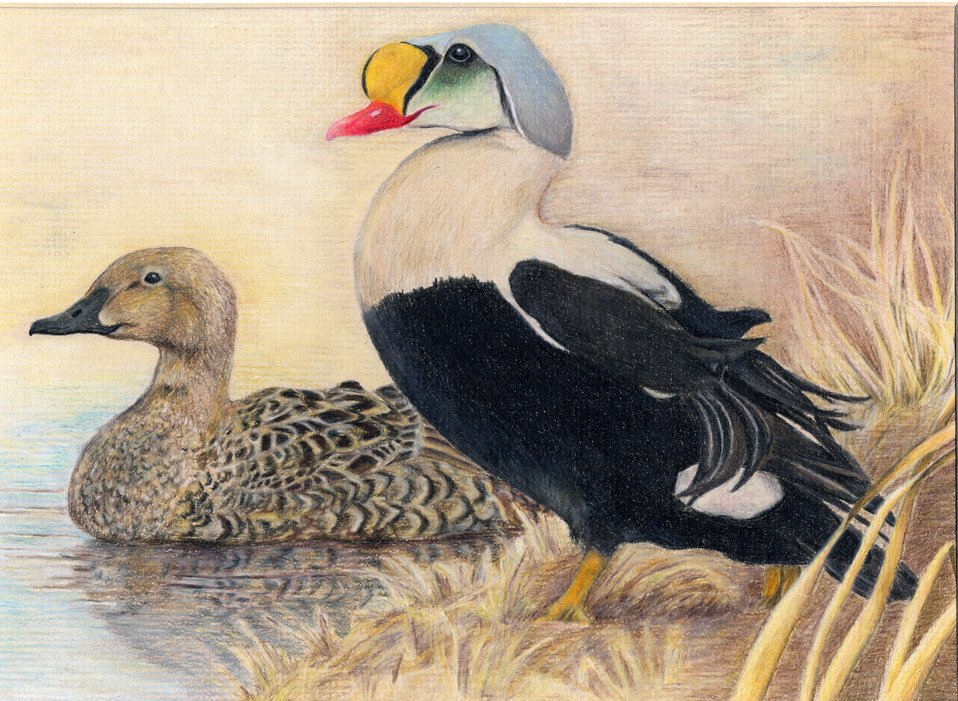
Kansas

2012 Jr Duck Stamp Program
State Best of Show
Kansas